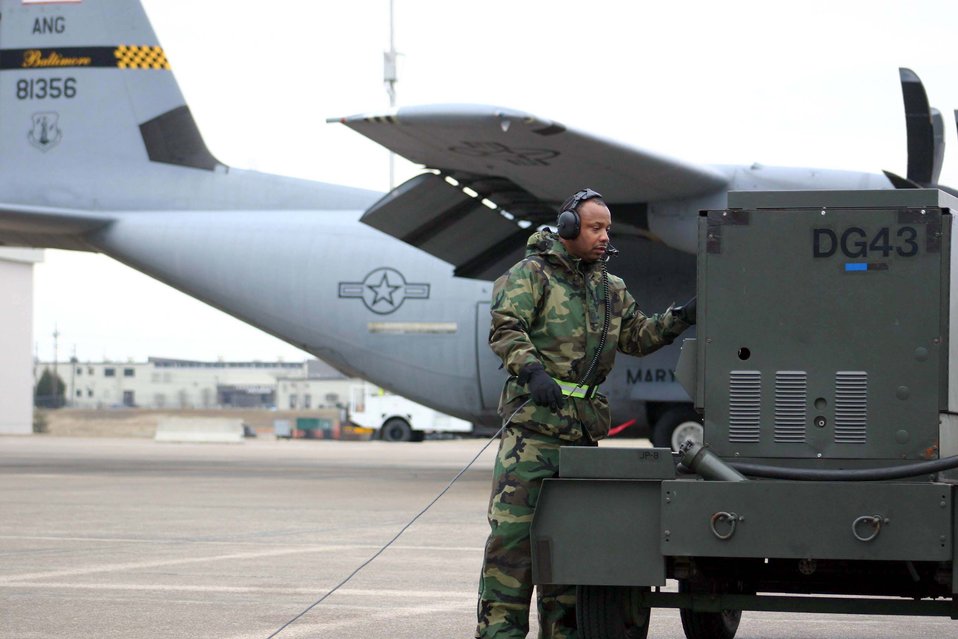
Hey 'J'

LITTLE ROCK AIR FORCE BASE, Ark. -- Master Sgt. Michael Sykes starts a generator to provide power to a C-130 Hercules J-model aircraft. Six Guard, Reserve and active-duty flying units participated in a monthlong procedures, development and evaluation test of the C-130J. Sergeant Sykes is a crew chief with the Maryland Air National Guard's 135th Maintenance Squadron.